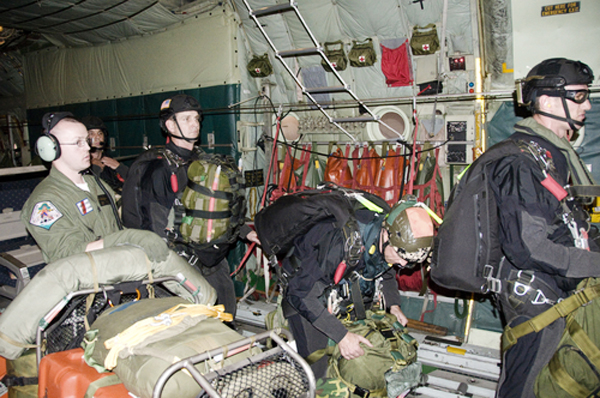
Rescue at sea

Pararescuemen from the California Air National Guard's 129th Rescue Wing prepare to jump from the rear door of a Coast Guard HC-130 Hercules April 1, 2010, approximately 1,400 miles southwest of San Diego. The Coast Guard and Air National Guard personnel worked together to rescue an injured 57-year-old sailor by dropping four pararescuemen, an inflatable boat and other rescue and survival equipment near his sailing vessel .